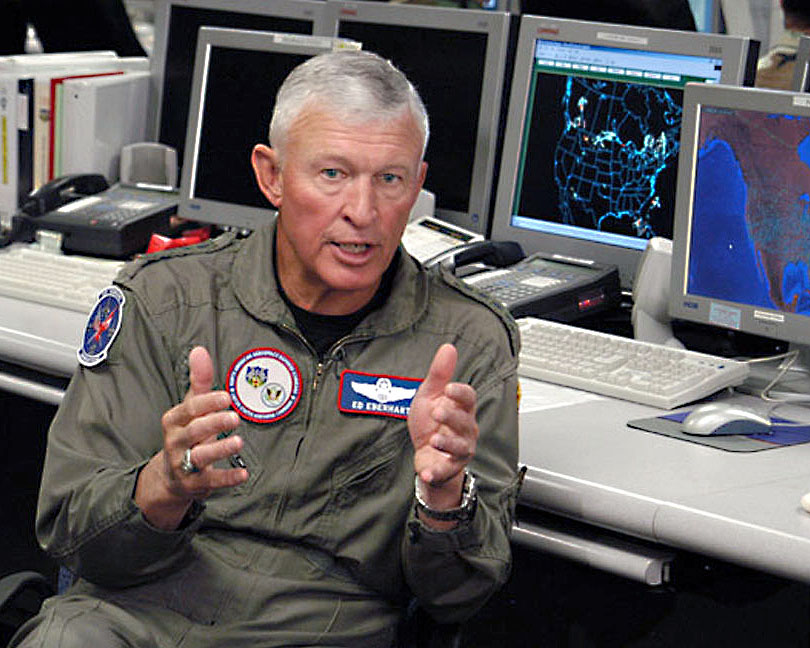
Gen. Eberhart

PETERSON AIR FORCE BASE, Colo. -- Gen. Ed Eberhart is the commander of U.S Northern Command. The command is responsible for protecting Americans where they live and work.